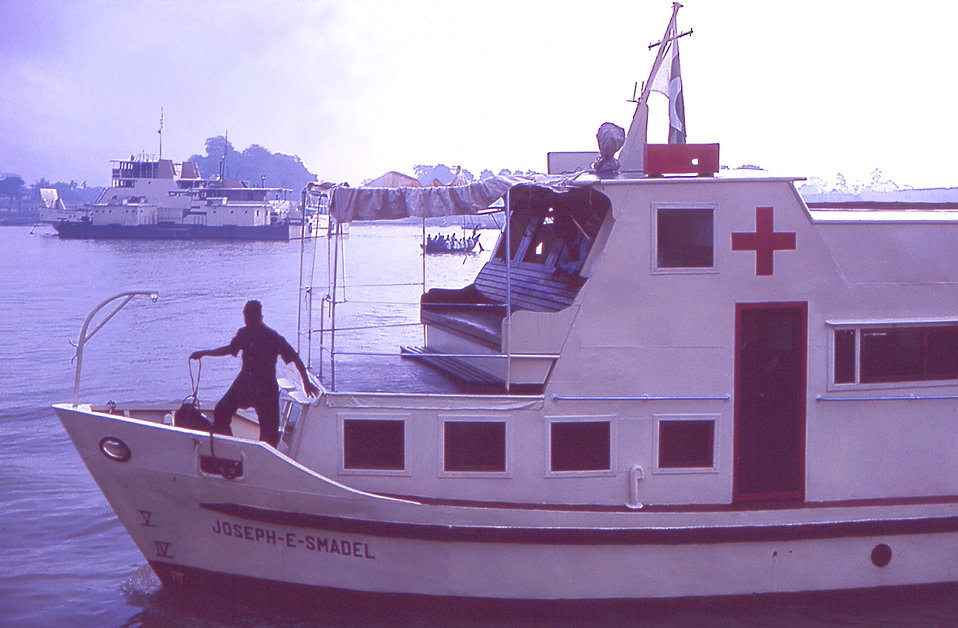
The 1964 EIS trip to East Pakistan, known as Bangladesh after 1971, featured travel on a hospital boat, the "Joseph E. Smadel."